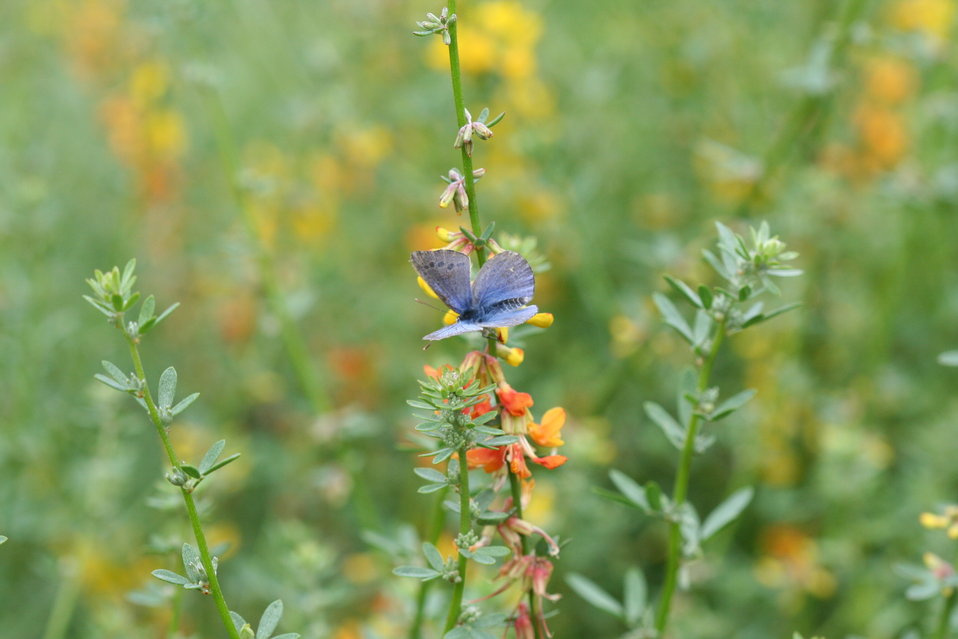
Endangered Palos Verdes blue butterfly